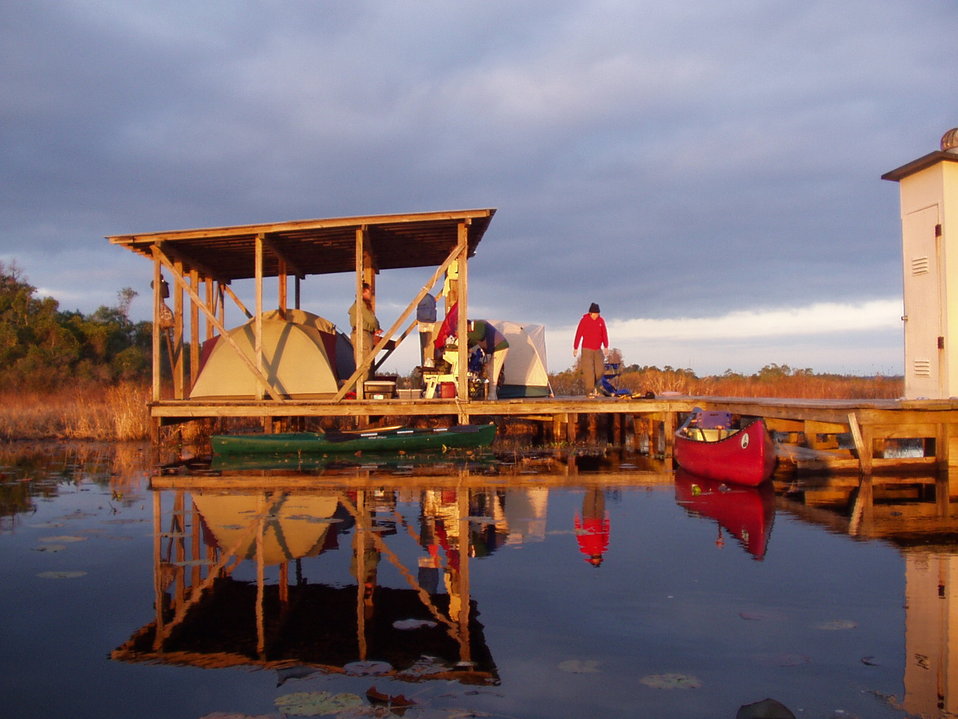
Early sunset, Okefenokee

Early sunset, Round Top overnight canoe shelter in Chase Prairie, Okefenokee National Wildlife Refuge.